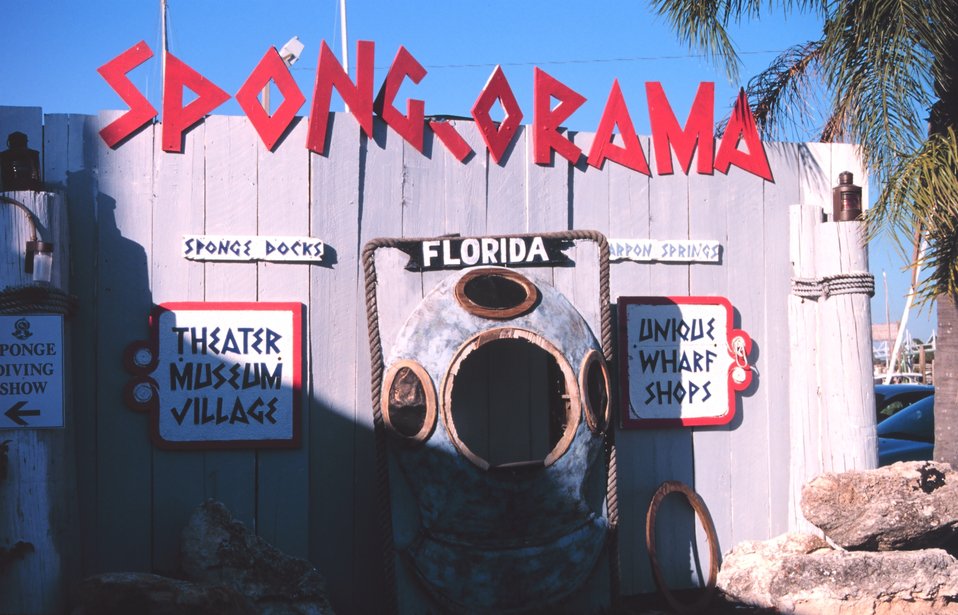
Sponge-O-Rama devoted to the sponge industry